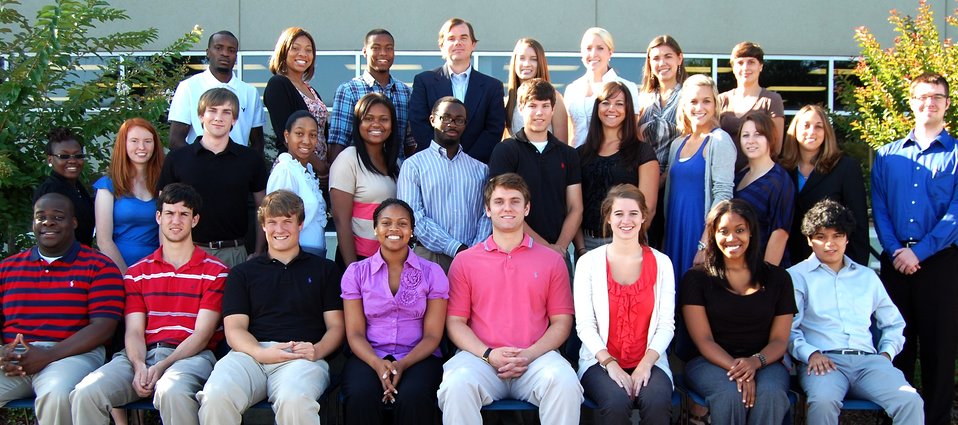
Savannah River Remediation Summer Intern Program Kicks Off

With confident expectations to earn a return on investment, Savannah River Remediation (SRR) welcomes 34 collegiate students to work as summer interns at Savannah River Site (SRS).

“Student interns are invaluable to us,” says Dave Olson, SRR President and Project Manager. “We give our interns jobs to perform that are both challenging and purposeful, which complement their educational background.”